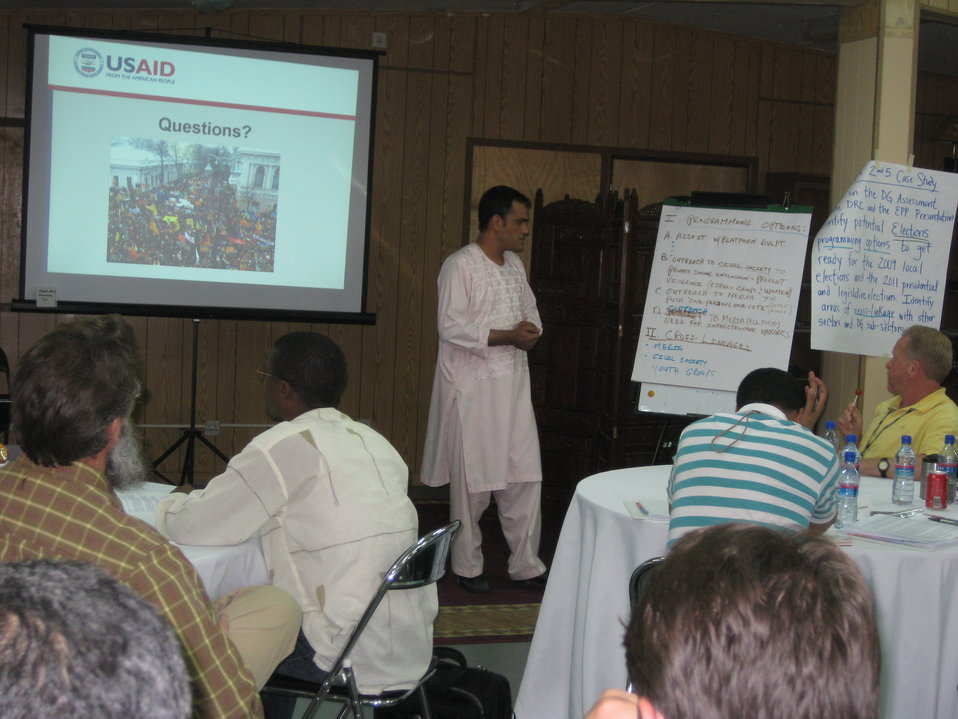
Afghan Youth Voices 041